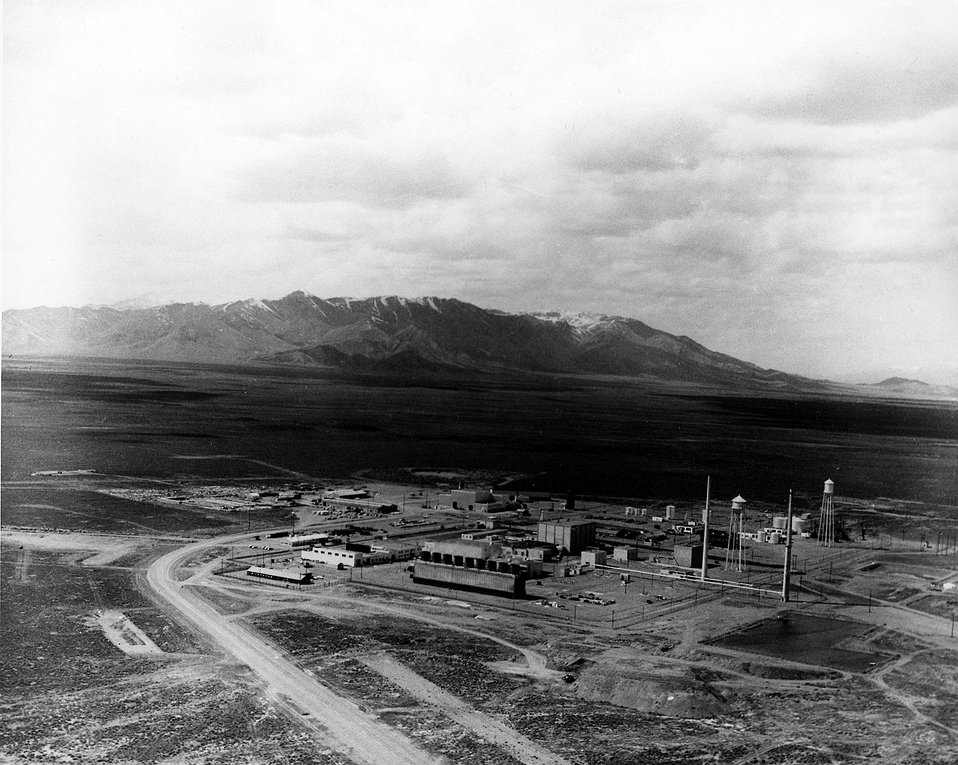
National Reactor Testing Station, Idaho... Naval Reactors Development Area, Idaho Falls, Idaho. Circa 1965.